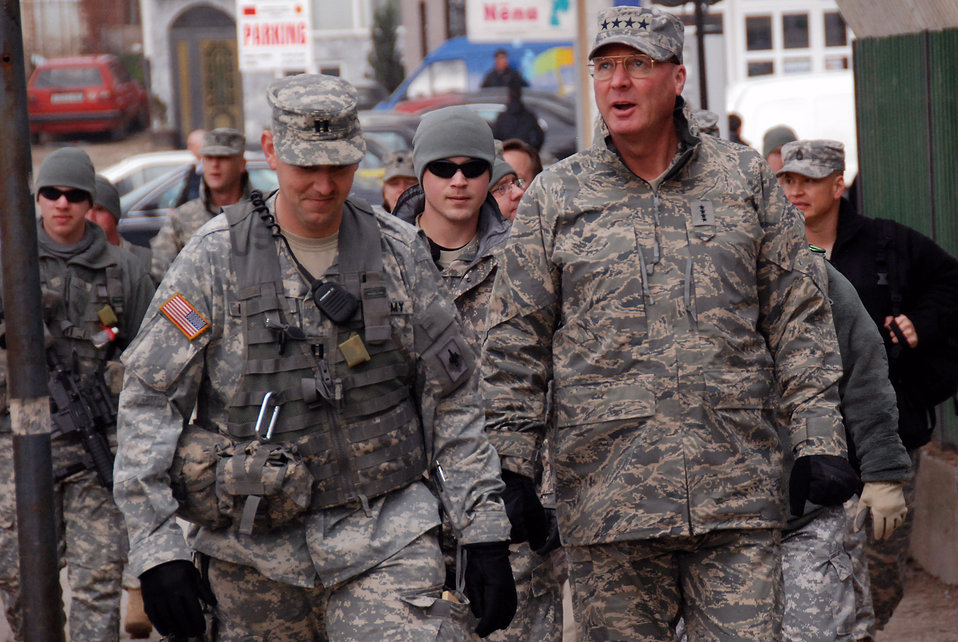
Guard bureau chief visits Soldiers in Balkans

Gen. Craig R. McKinley, chief of the National Guard Bureau, left, and Army Capt. Shannon Dean Holiday, commander of Multinational Task Force East's Thunder Bravo battery, walk the streets of downtown Pristina, Kosovo, during a presence patrol with the Missouri Army National Guard.